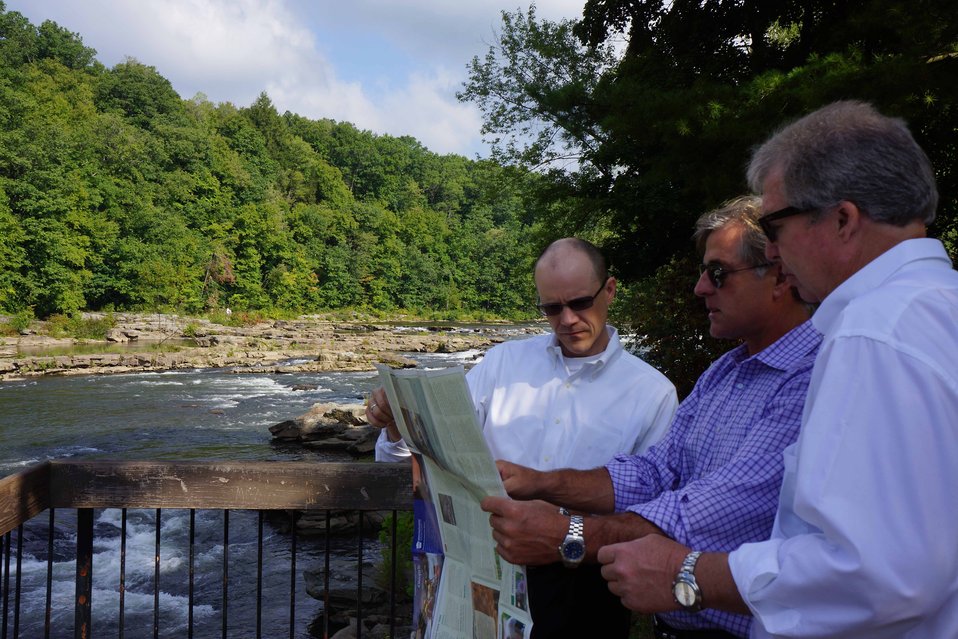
O'brien Trail Tour

U.S. Department of Agriculture (USDA) Rural Development (RD) Deputy Under Secretary Doug O’Brien (left) and USDA RD Pennsylvania State Director Thomas Williams (right) review the Great Allegheny Passage (GAP) trail map with Progress Fund representative David Kahley (center) near Pittsburgh, PA on March 16, 2012. Businesses along the trail have received funding through the Progress Fund is a non-profit community development lender and has been the recipient of several Rural Development Business Program loans and grants which were passed on to the trail town businesses to help spur economic development in distressed rural areas.